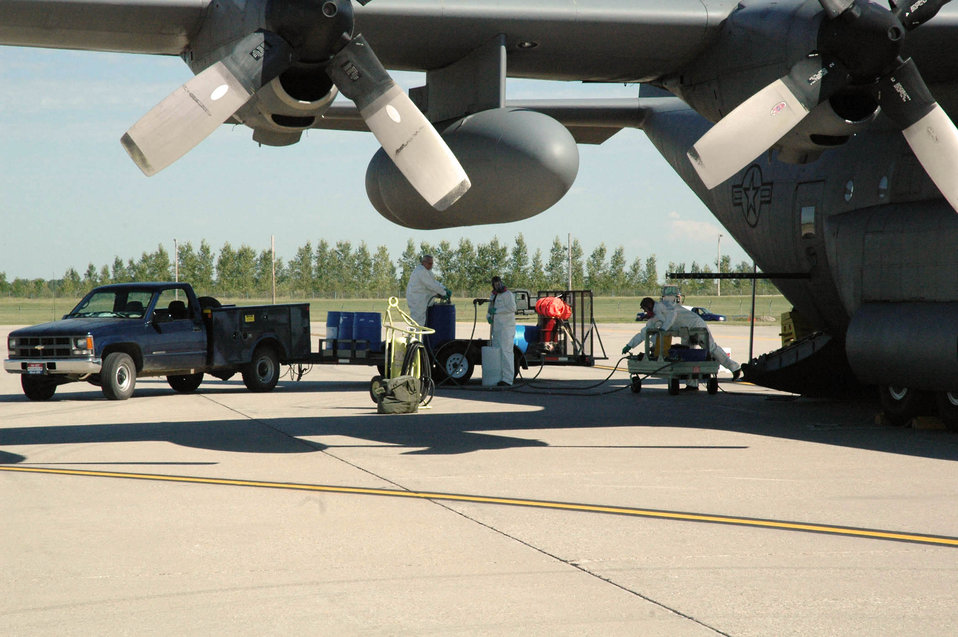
Mosquito assault

MINOT AIR FORCE BASE, N.D. -- (From left) Tech. Sgts. Mike Lamantia and Lyle Heffner and Staff Sgt. Tom Kocis prepare to load a C-130 Hercules spraying system with a product used to reduce and control the mosquito population. They conducted aerial spraying here and in the local community July 19 and 20. The three aerial spray technicians are with the 757th Airlift Squadron from Youngstown Air Reserve Base, Ohio.